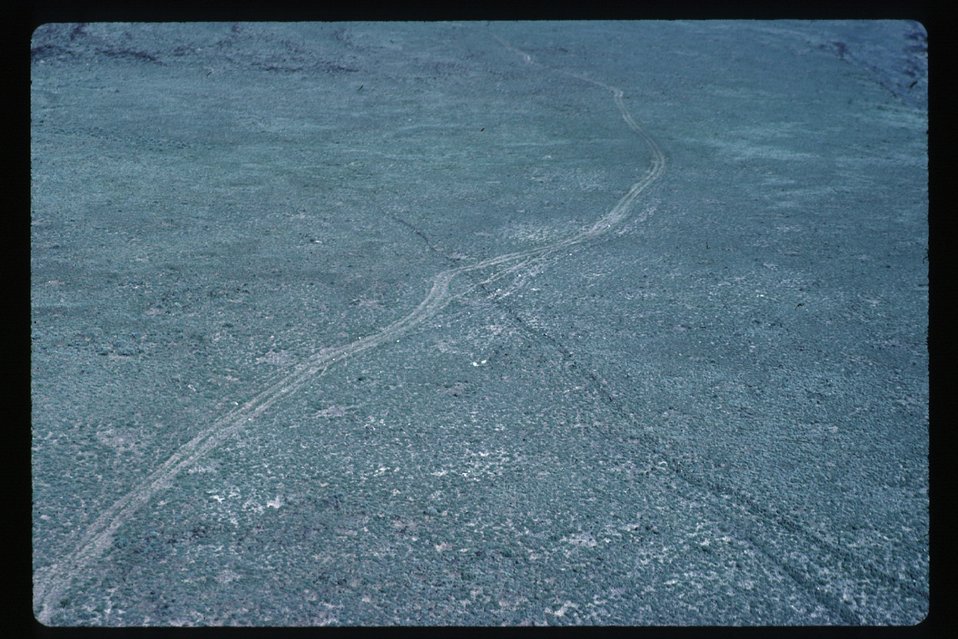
Shoofly Rock Archeology LSRD Lower Snake River District